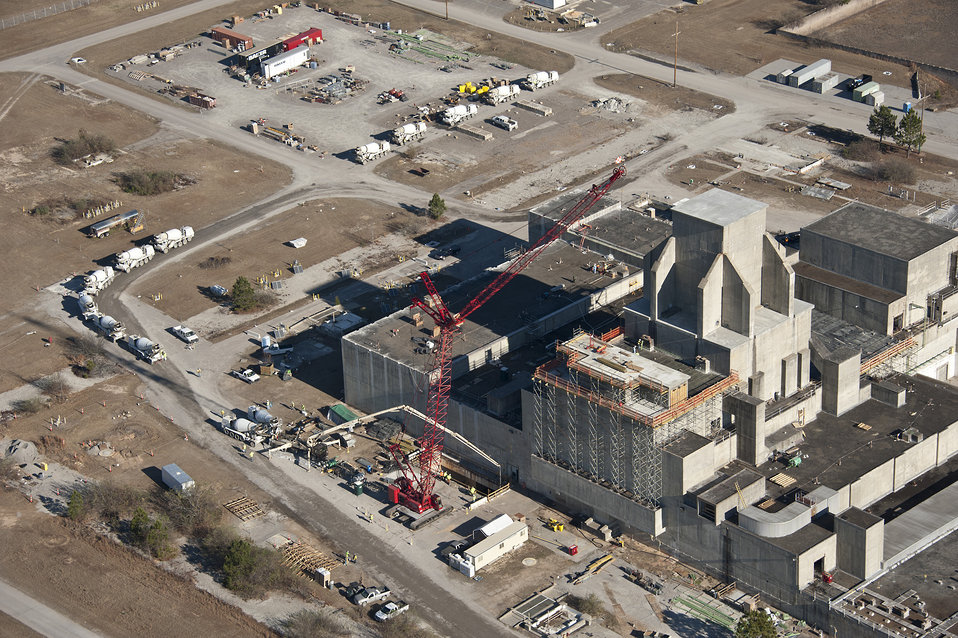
P Reactor Aerial